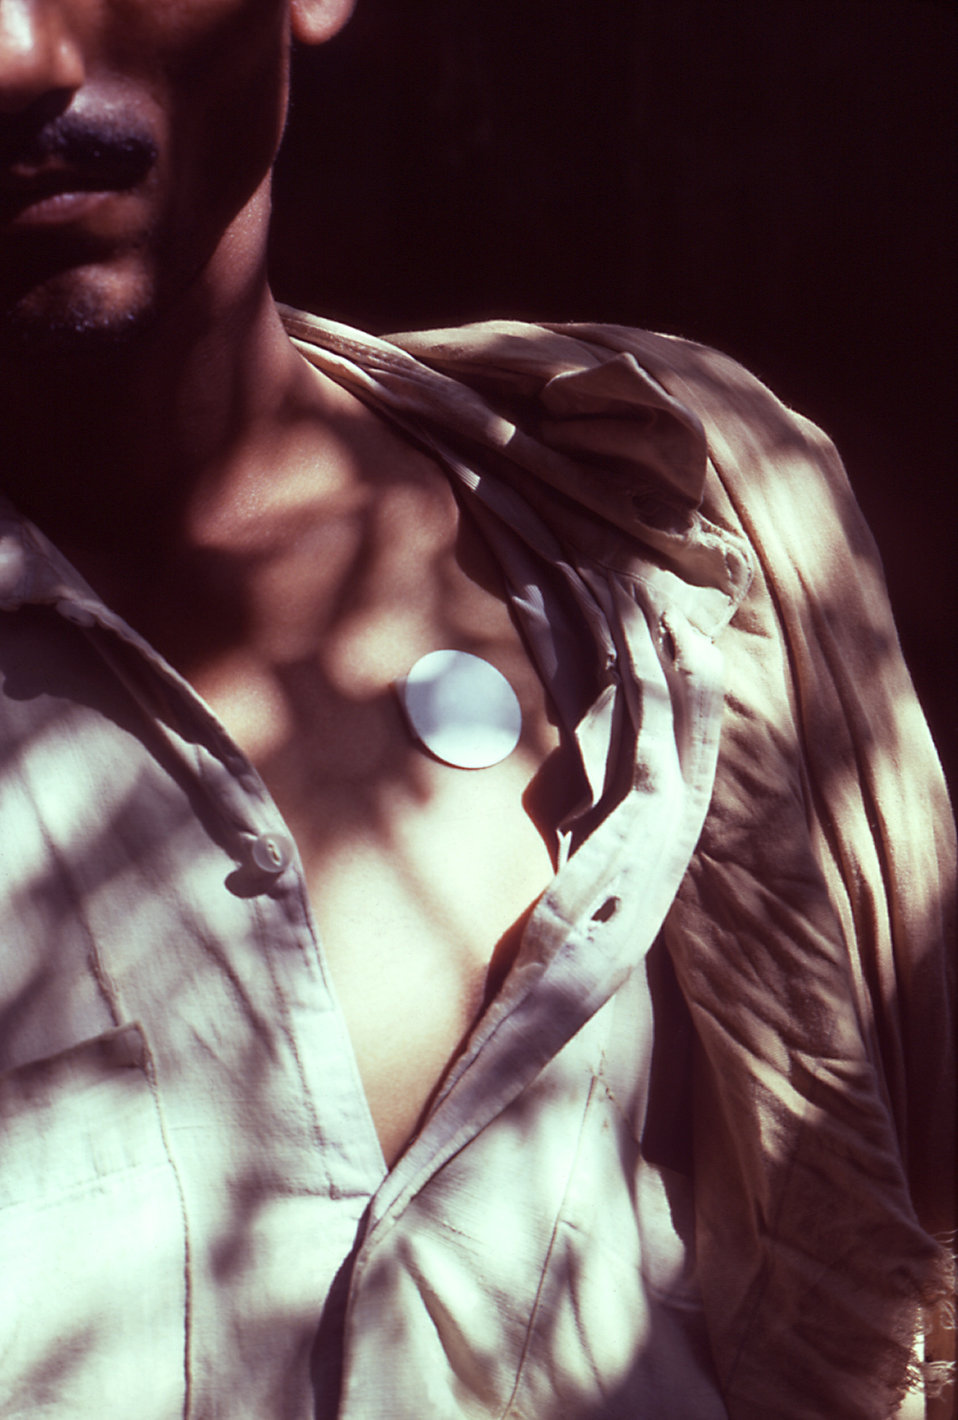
This image depicts a Pakistani malaria control worker undergoing skin patch testing during a 1976 malathion poison study.